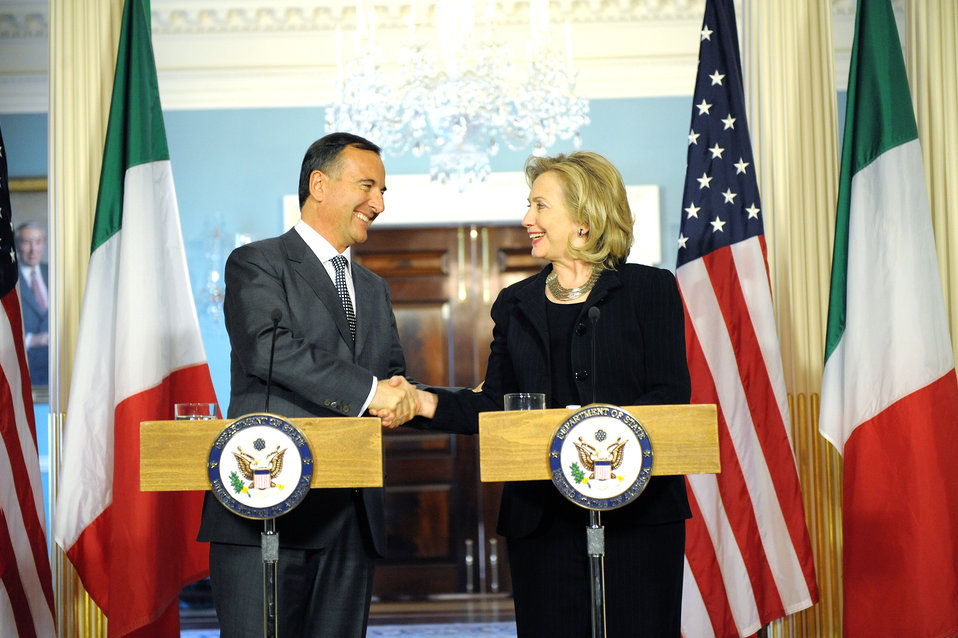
Secretary Clinton and Italian Foreign Minister Frattini Shake Hands

U.S. Secretary of State Hillary Rodham Clinton shakes hands with Italian Foreign Minister Franco Frattini after their joint press conference, at the U.S. Department of State in Washington, D.C., on April 6, 2011.